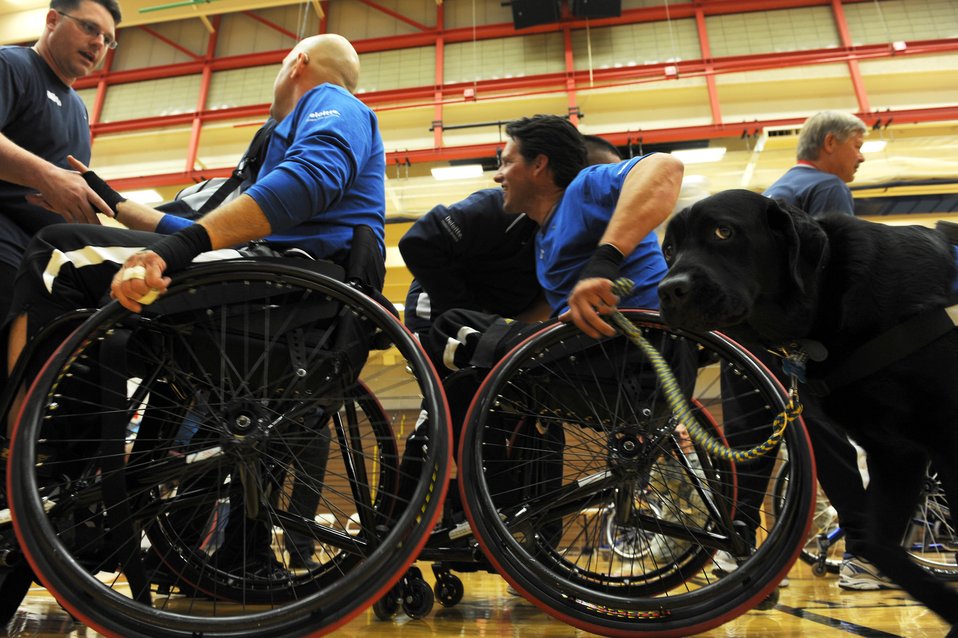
AF Basketball

Team Air Force shake hands after the Warrior Games bronze medal match against the Navy May 12, 2010 at the Olympic Training Center, Colorado Springs. The Air Force went on to win the game 13-10. The Warrior Games competition began May 10 and finishes on May 14, 2010 at the U.S. Olympic Training Center in Colorado Springs.